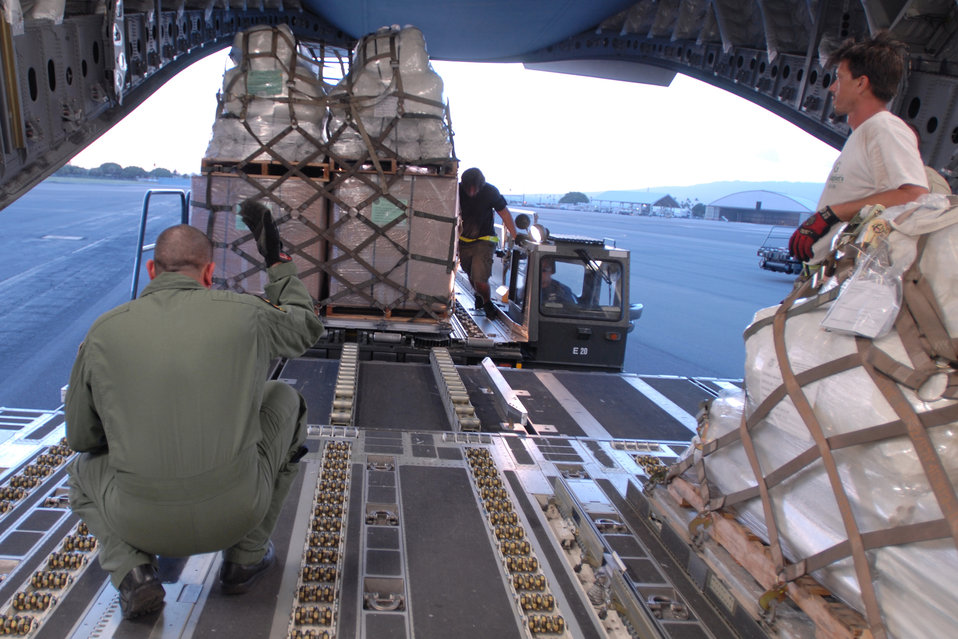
Humanitarian aid bound for tsunami relief effort

Tech. Sgt. Kimo McKee directs the loading of humanitarian aid supplies from the Federal Emergency Management Agency by Hawaii Air National Guard, Hawaii National Guard and Hickam Air Force Base active-duty Airmen into a C-17 Globemaster III bound for American Samoa to assist in the relief efforts under way Sept. 30, 2009, at Hickam AFB, Hawaii. The efforts are in the wake of tsunamis triggered by an undersea earthquake Sept. 29 that has left more than 140 people dead in the South Pacific region. More than 90 Airmen and Soldiers deployed from Hawaii for the humanitarian mission. Sergeant McKee is a Hawaii Air National Guard loadmaster.